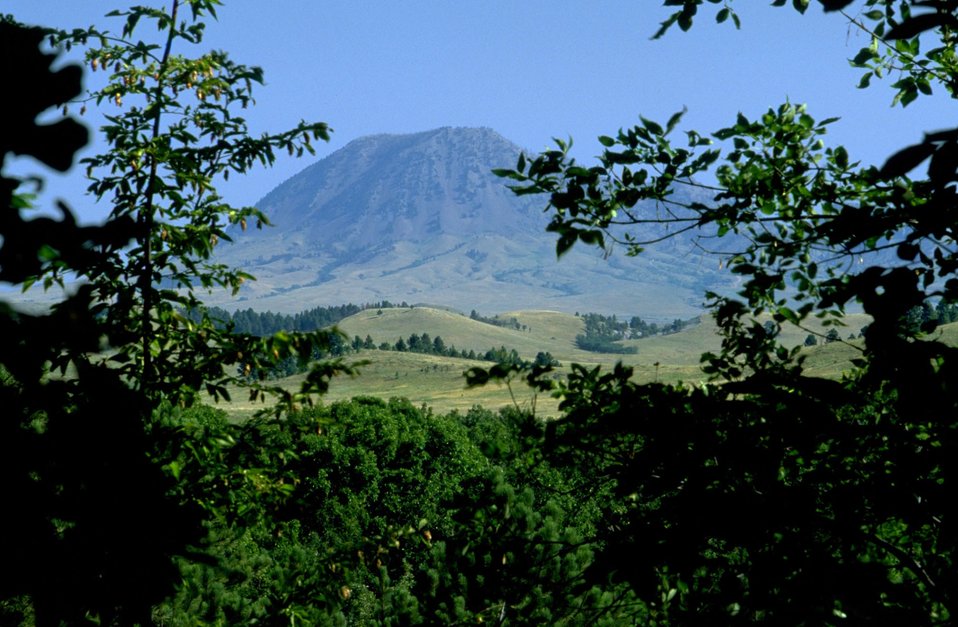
Bear Butte framed by trees